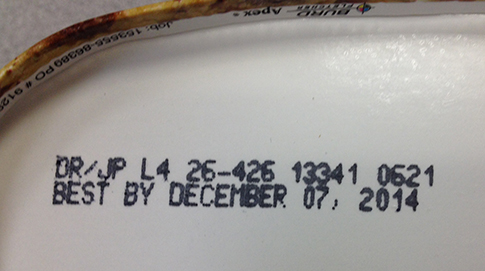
RECALLED – Belmont Chocolate Chip Cookie Dough Ice Cream

March 5, 2014 – Product Recall – House of Flavors Issues Voluntary Recall Due to Possible Undeclared Nut Allergen in Belmont Chocolate Chip Cookie Dough Ice Cream.